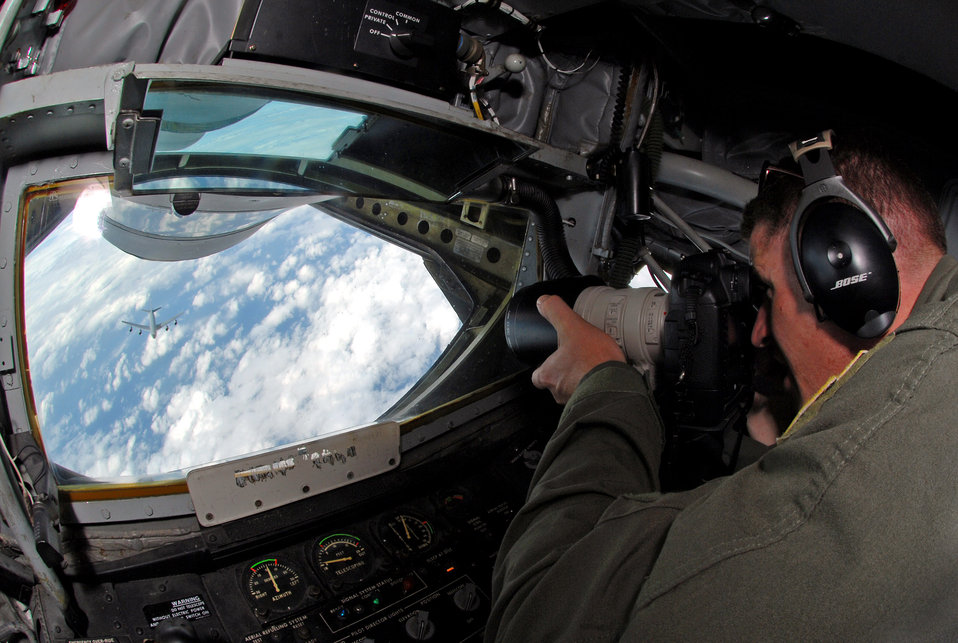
Taking a few photos for posterity

Capt. Jeremy Boyd takes a few photographs Nov. 9 from the boom pod of a KC-135 Stratotanker during his final flight. Captain Boyd is a KC-135 pilot assigned to the 18th Wing at Kadena Air Base, Japan. ,